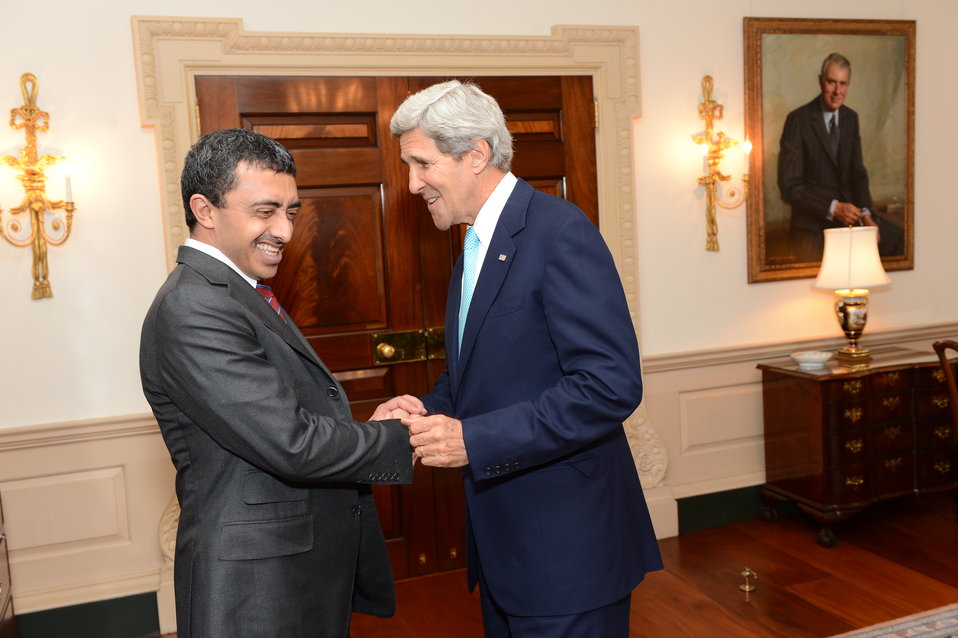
Secretary Kerry Shakes Hands With UAE Foreign Minister Sheikh Abdullah bin Zayed Al Nahyan

U.S. Secretary of State John Kerry shakes hands with Foreign Minister of the United Arab Emirates Sheikh Abdullah bin Zayed Al Nahyan before their bilateral meeting at the U.S. Department of State in Washington, D.C., on July 23, 2013.